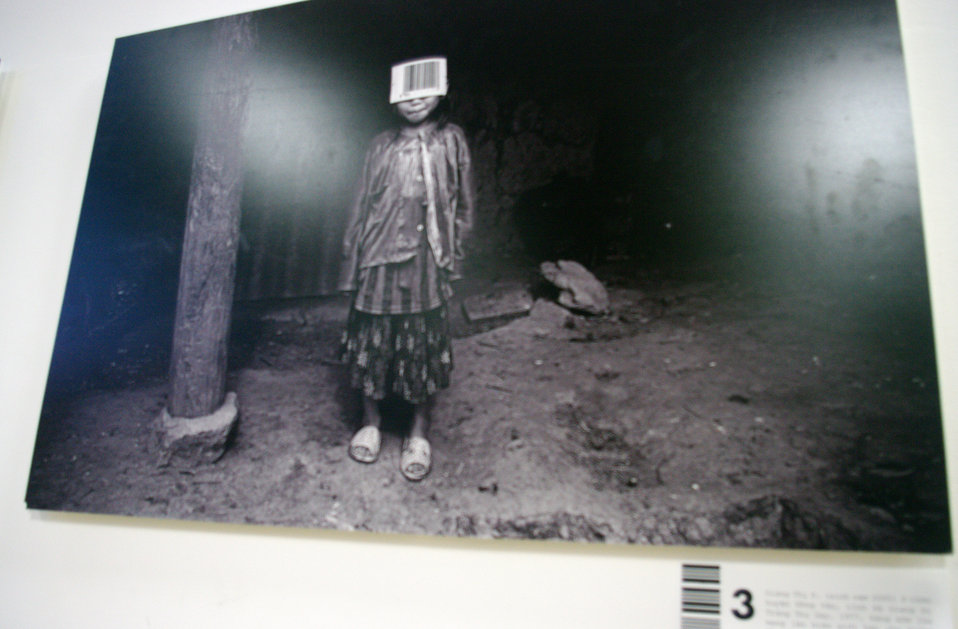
MTV EXIT opens Youth Forum in Hanoi